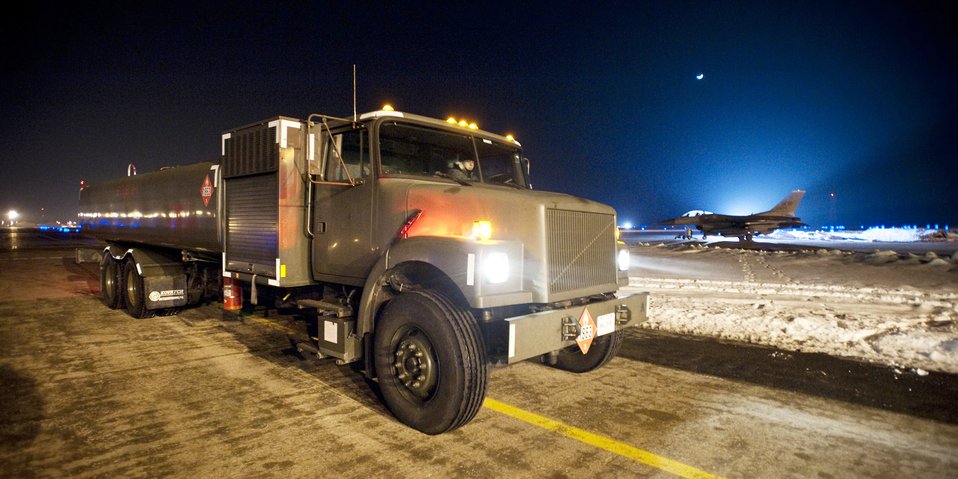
Fuels on a freezing day at Misawa

An R-11 fuel truck carrying JP-8 jet fuel pulls up in front of a hardened aircraft shelter to refuel an F-16 Fighting Falcon Jan. 19, 2010, at Misawa Air Base, Japan. The 35th Logistics Readiness Squadron fuels management flight ensures wing and transient aircraft receive fuel 24 hours a day, seven days a week.